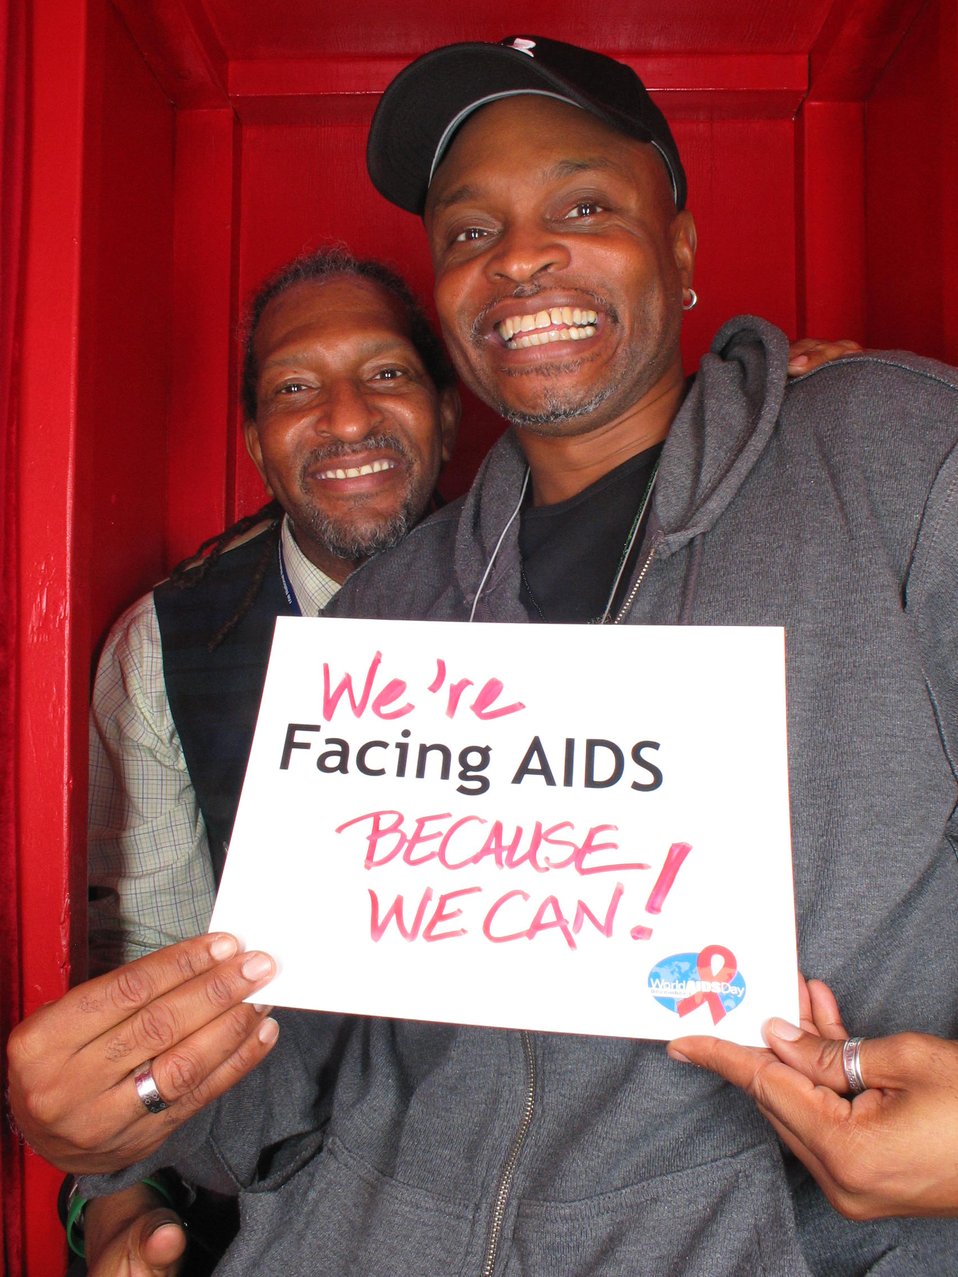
We're Facing AIDS because we can.